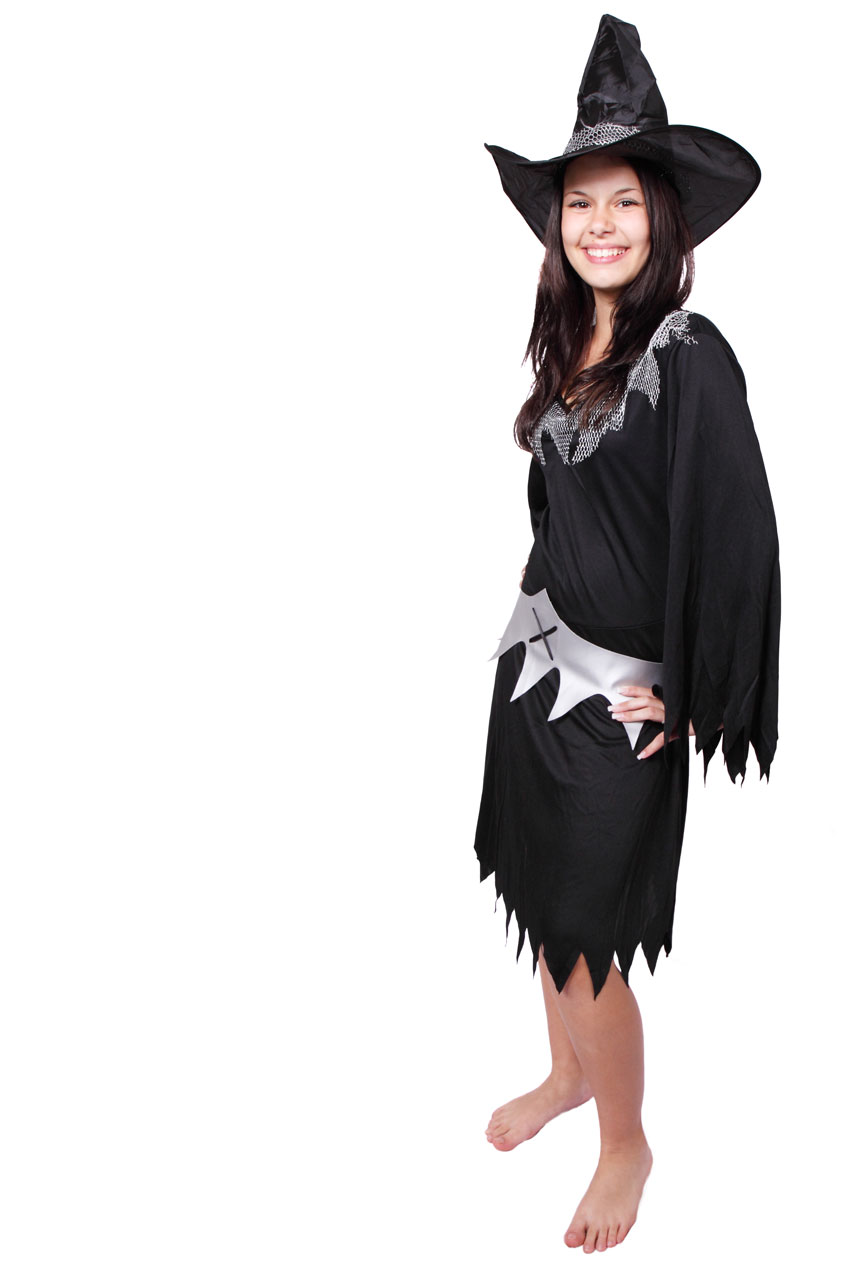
Halloween witch

Cute witch isolated on white background.